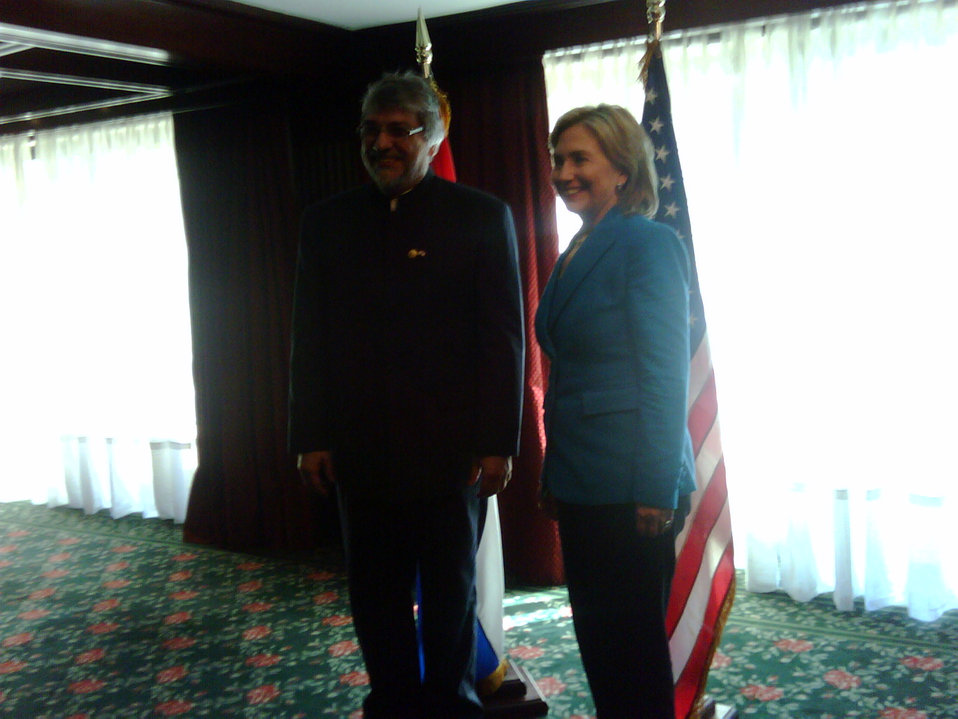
Secretary Clinton Meets With President Fernando Lugo of Paraguay

U.S. Secretary of State Hillary Rodham Clinton meets with Paraguay President Fernando Lugo in Montevideo, Uruguay March 1, 2010.